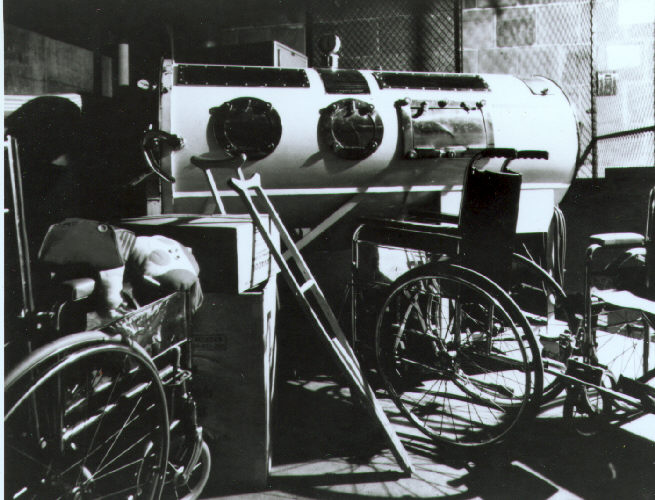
Aids used by polio victims. See PHIL, 14796 for a color version of this image.